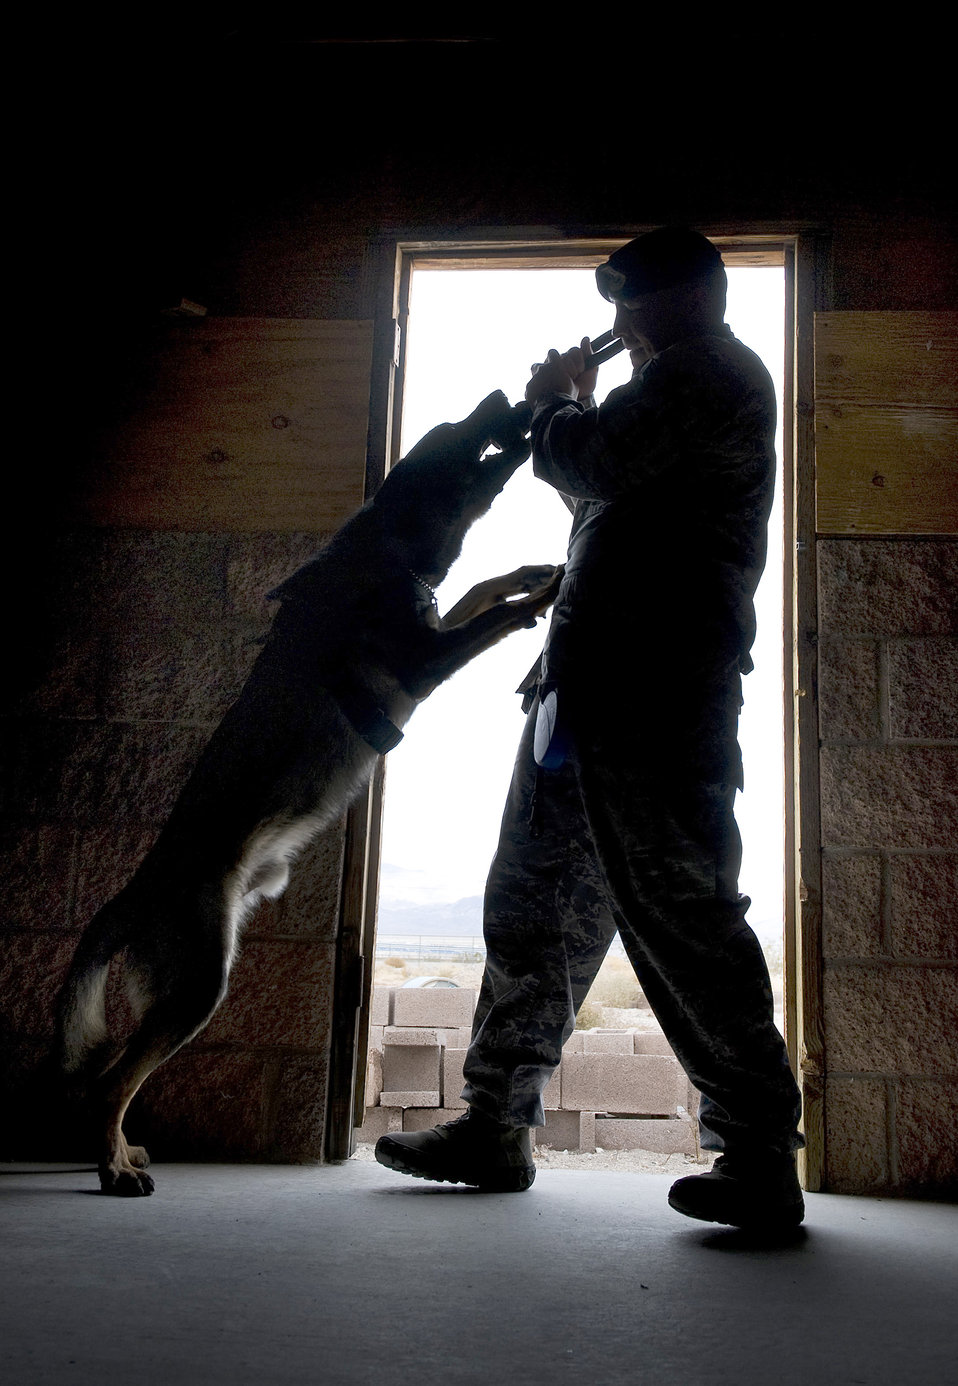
Nellis AFB officials host joint training exercise for local canine units

Senior Airman Felipe Alvarado rewards Pike with a chew toy after he discovered explosive ordnance Dec. 16, 2010, at Nellis Air Force Base, Nev., during a joint explosive detection training exercise. Airman Alvarado is a 99th Security Forces Squadron military working dog handler, and Pike is an Air Force military working dog.